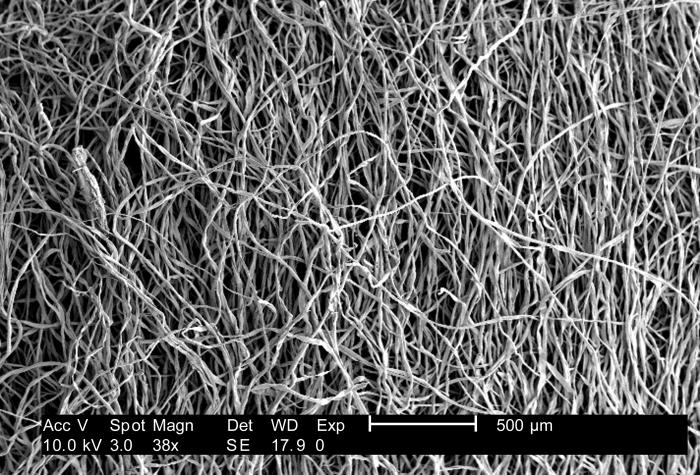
Under a low magnification of 38x, this 2007 scanning electron micrograph (SEM) depicted the fibrous configuration of a plain uninoculated cotton swab. This swab, as well as three other materials, including macrofoam (see PHIL 9736, 9737, 9738), polyester (see PHIL 9735), and rayon (see PHIL 9734) were scanned for a CDC study involving their efficiency in recovery of Bacillus anthracis bacterial spores from steel coupons that had been inoculated with a spore suspension of known concentration. See PHIL 9732, for another view of this material. The article discussing the description of this swab material analysis, and the analytical results was published in 'Emerging Infectious Diseases', Vol. 10, No. 6, June, 2004, and was entitled, Swab Materials and Bacillus anthracis Spore Recovery from Nonporous Surfaces. A link to this article is found below.